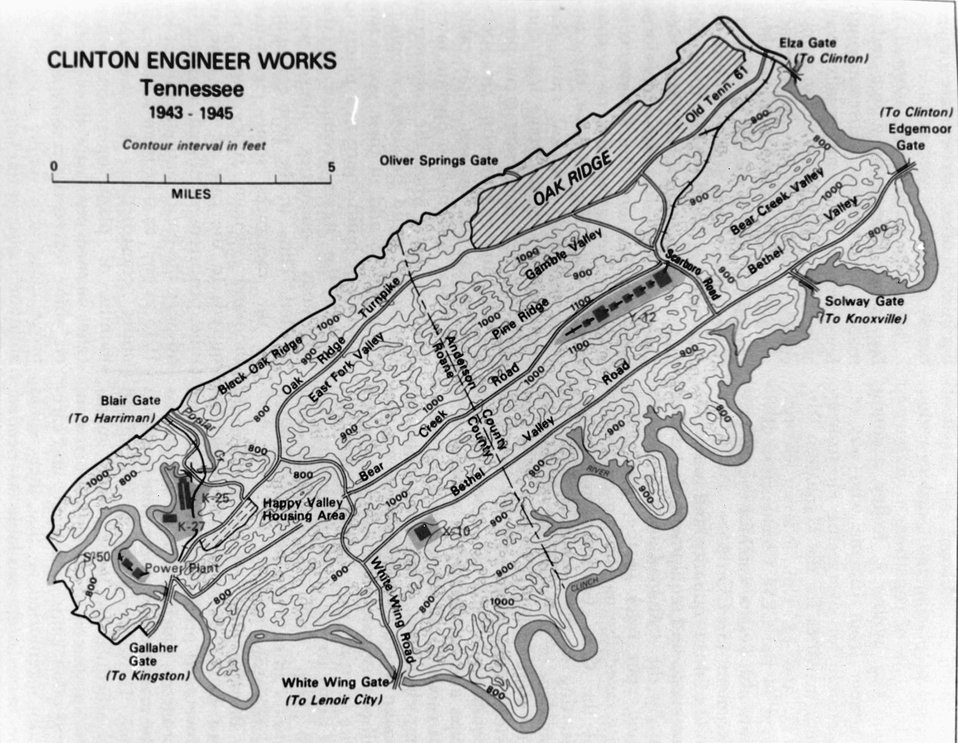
Hanford Engineer Works. Reprinted from Vincent C. Jones, Manhattan: The Army and the Atomic Bomb (Washington, D.C.: U.S. Government printing Office, 1985).